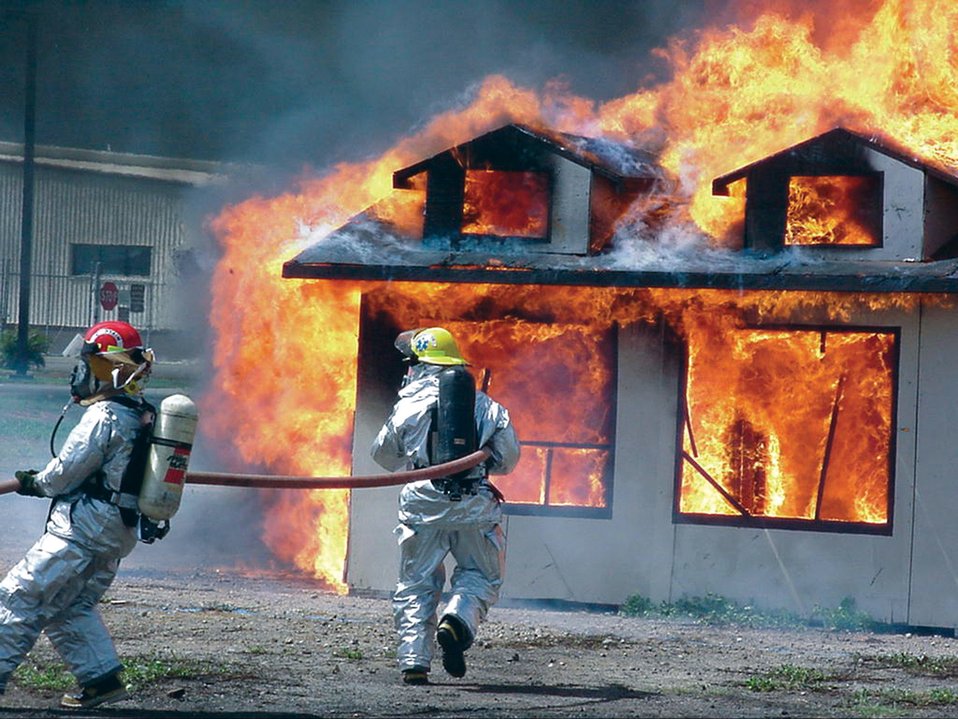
'101 Critical Days' kicks off Memorial Day

Firefighters from the 15th Civil Engineer Squadron Fire Protection Flight train on a deserted dwelling at Hickam Air Force Base, Hawaii. Safety officials remind people it doesn't take much to turn this training scenario into reality when people don't pay attention cooking or barbecuing.